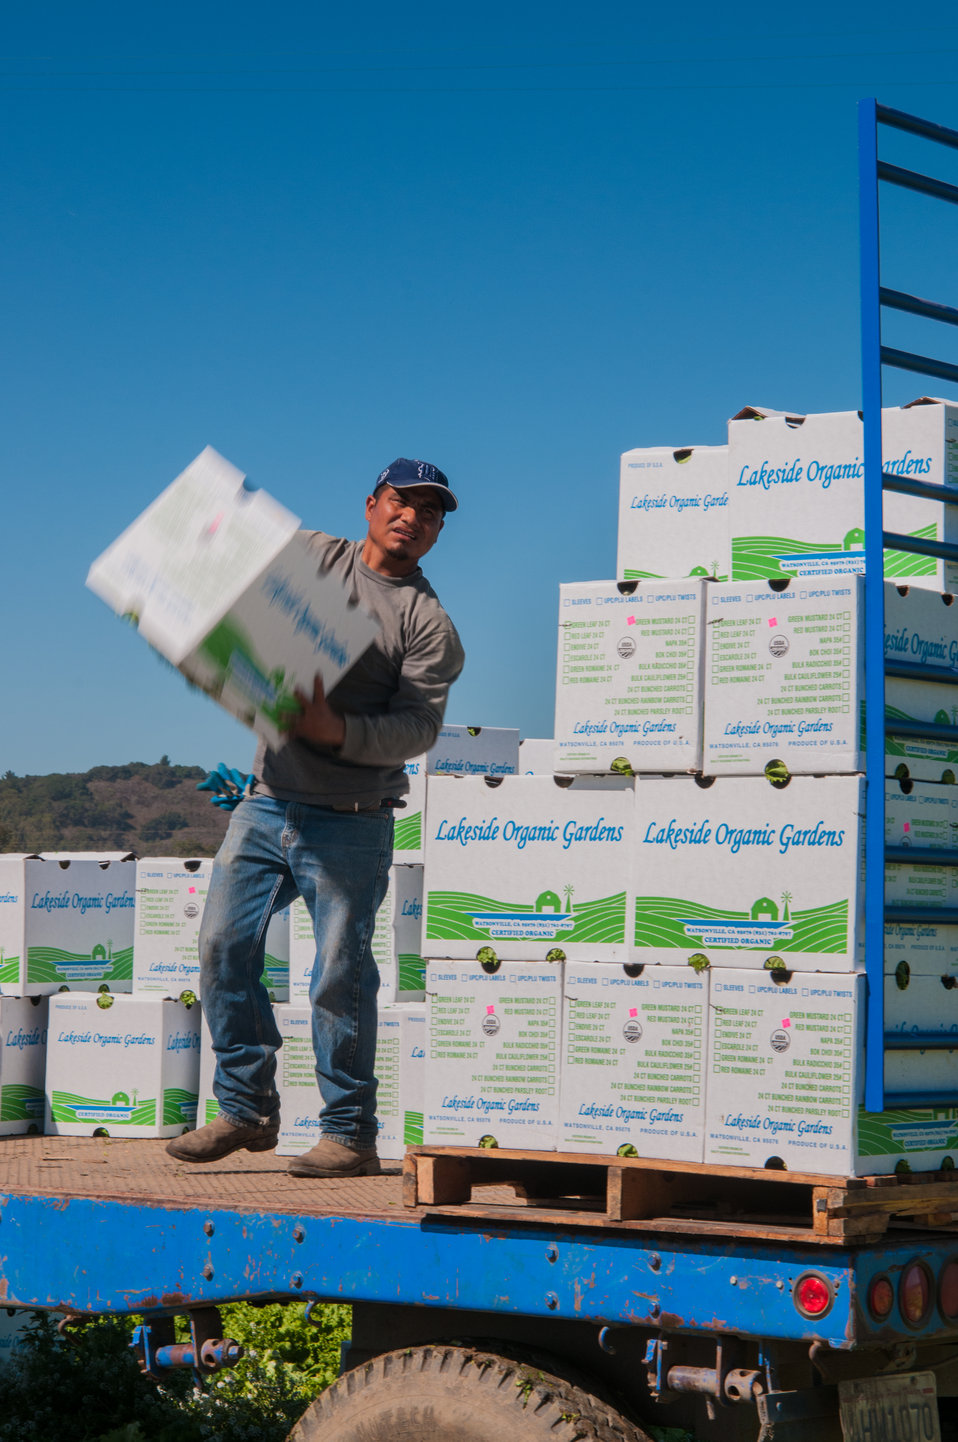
Migrant workers harvest Lettuce at Lakeside Organic Gardens in Watsonville, CA on Tuesday, Aug. 27, 2013.